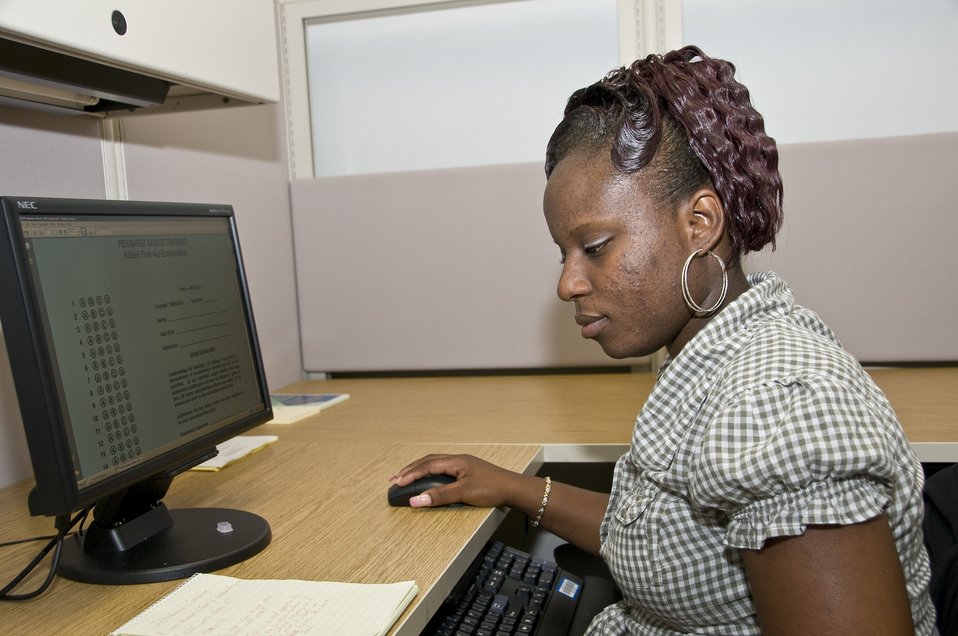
Janella Bradley